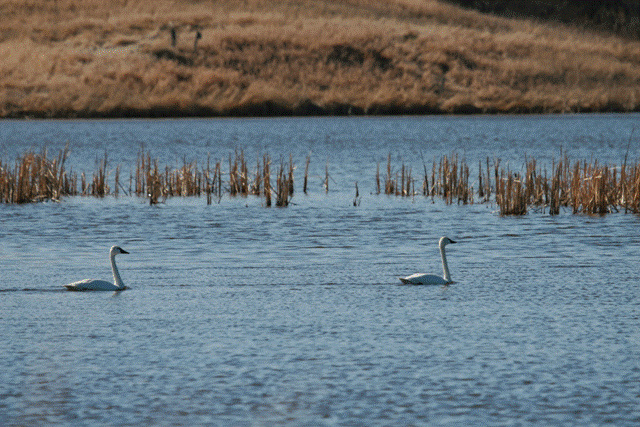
Tundra Swan Pair

Tundra Swans breed in the Arctic and subarctic tundra, where they inhabit shallow pools, lakes and rivers. This pair is only resting on Des Lacs Refuge on their way to the Arctic.